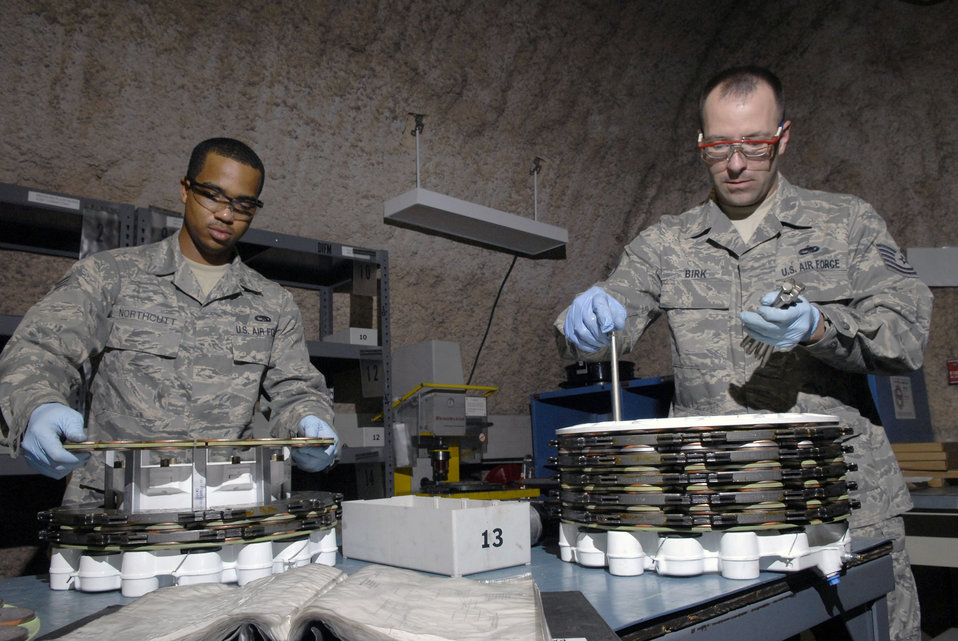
Take a brake

Senior Airman Joseph Northcutt and Tech. Sgt. Wayne Birk assemble two KC-135 Stratotanker steel brake units April 17 at an air base in Southwest Asia. Both Airmen are assigned to 379th Expeditionary Maintenance Squadron hydraulics shop which supports all of the C-135 airframes in the U.S. Central Command's area of responsibility.